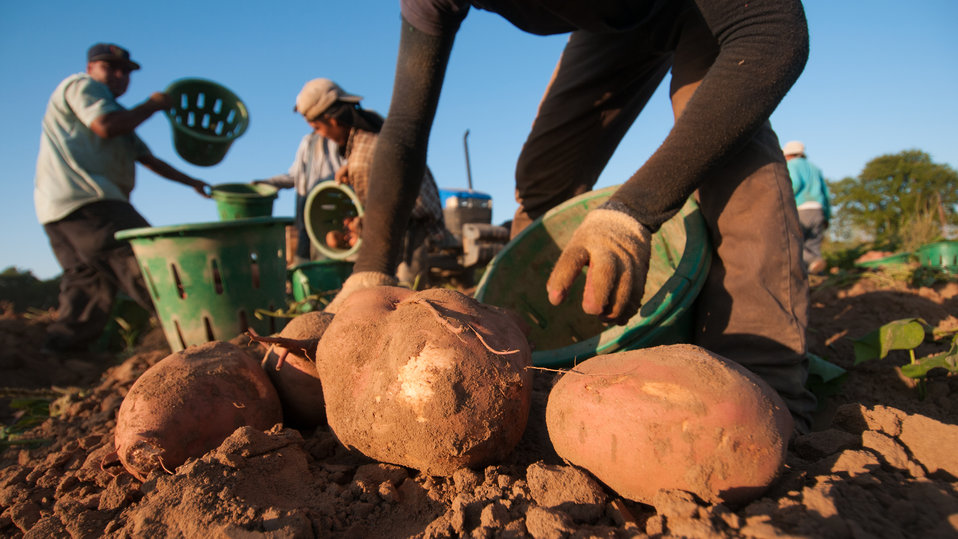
Migrant workers carefully lift large sweet potatoes as they pick and sort according the potatoes to size at Kirby Farms in Mechanicsville, VA on Sep. 20, 2013. Fresh from the ground the red skin is easily marred (light spot) and hand picking helps keep them looking good. Kirby Farms is a third-generation family farm that covers 500 acres, and generates produce and grains on a year-around operation. Please see the photoset description for more information about this harvest.